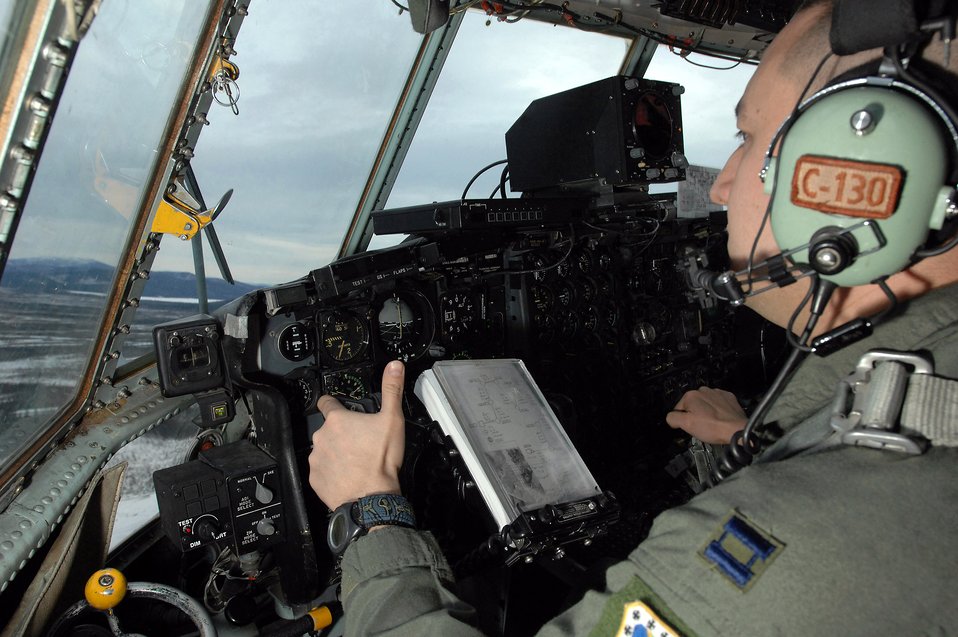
Northern exposure

Capt. Joe Clancy keeps an eye out for simulated anti-aircraft fire during a training mission Feb. 1 over Alaska. Captain Clancey is a pilot for to the 517th Airlift Squadron from Elmendorf Air Force Base, Alaska. The 517th AS will replace its fleet of C-130s with the C-17 Globemaster III in 2007.